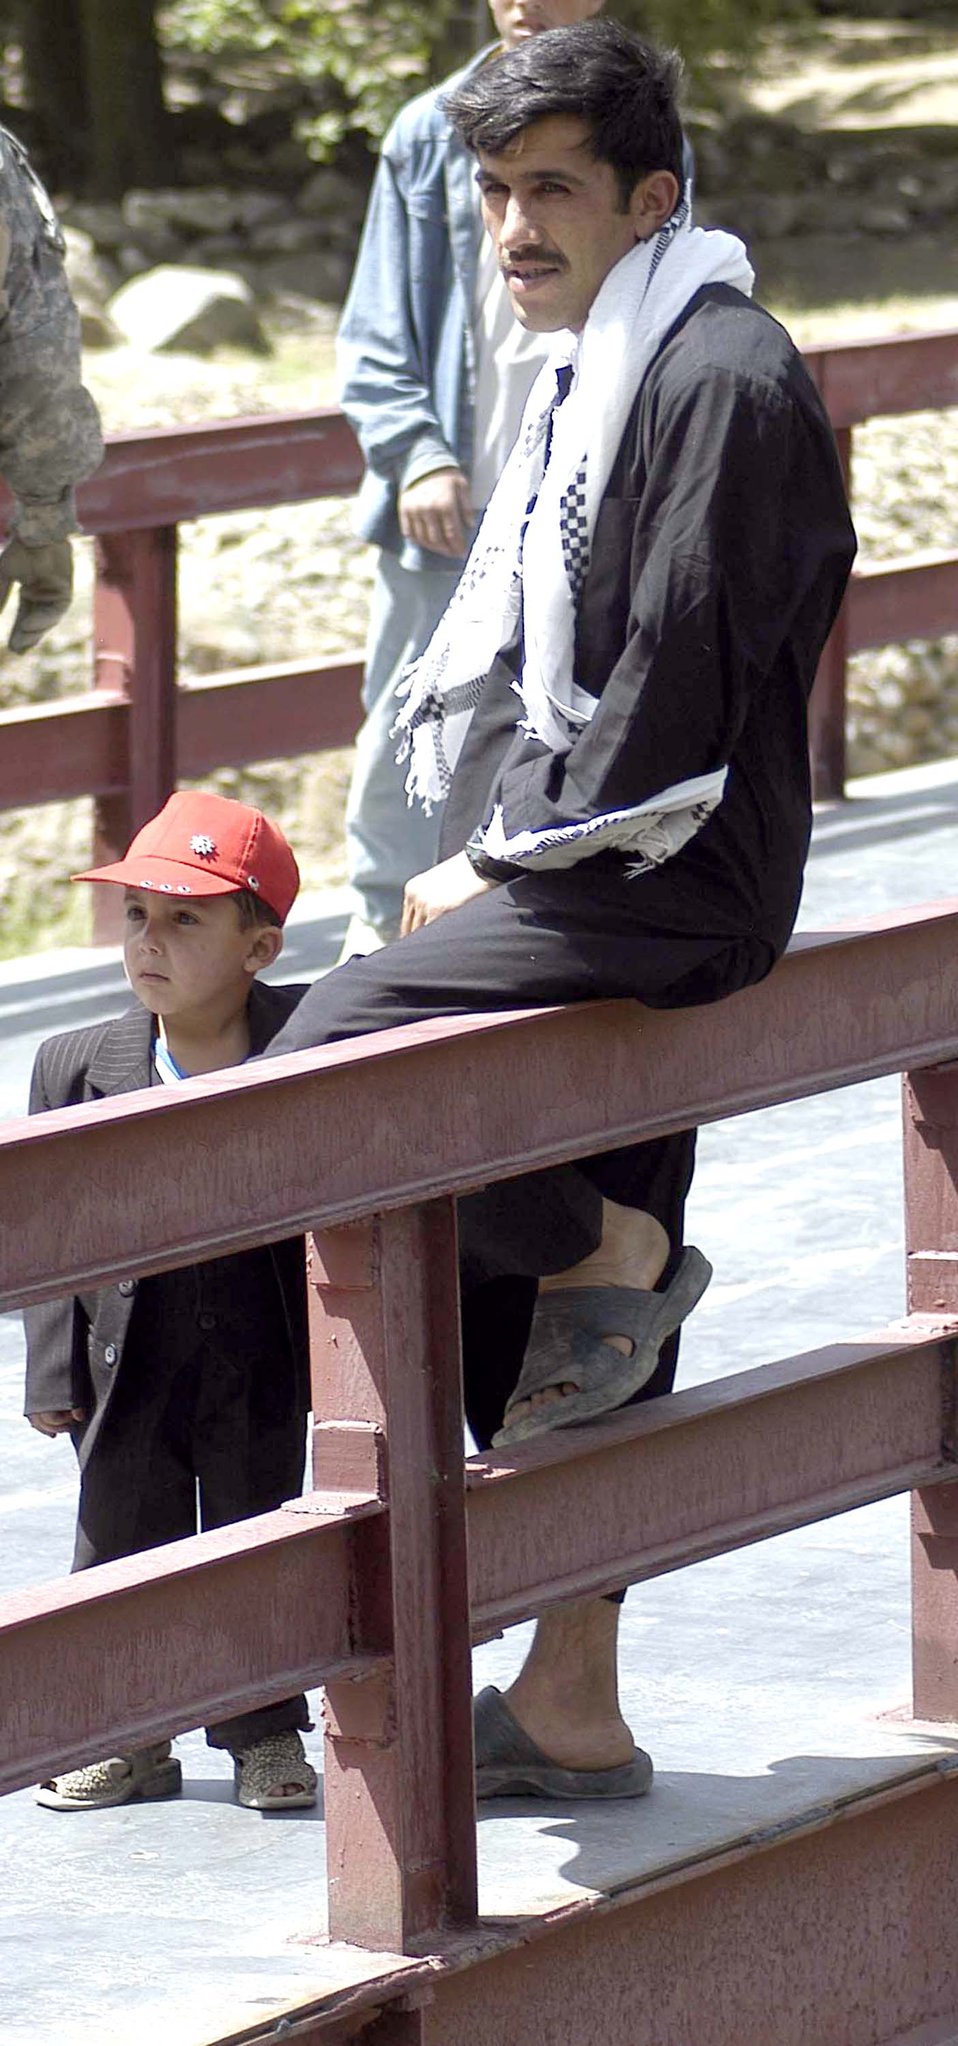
U.S., Parwan governments build 'bridge to future'

An Afghan father and son sit on the railing of a newly constructed bridge in the northern Parwan Province of Afghanistan on July 11. The bridge, an initiative of the Parwan government and supported by the U.S. military's Bagram Provincial Reconstruction Team, links 600 to 700 Afghan families to a main road.